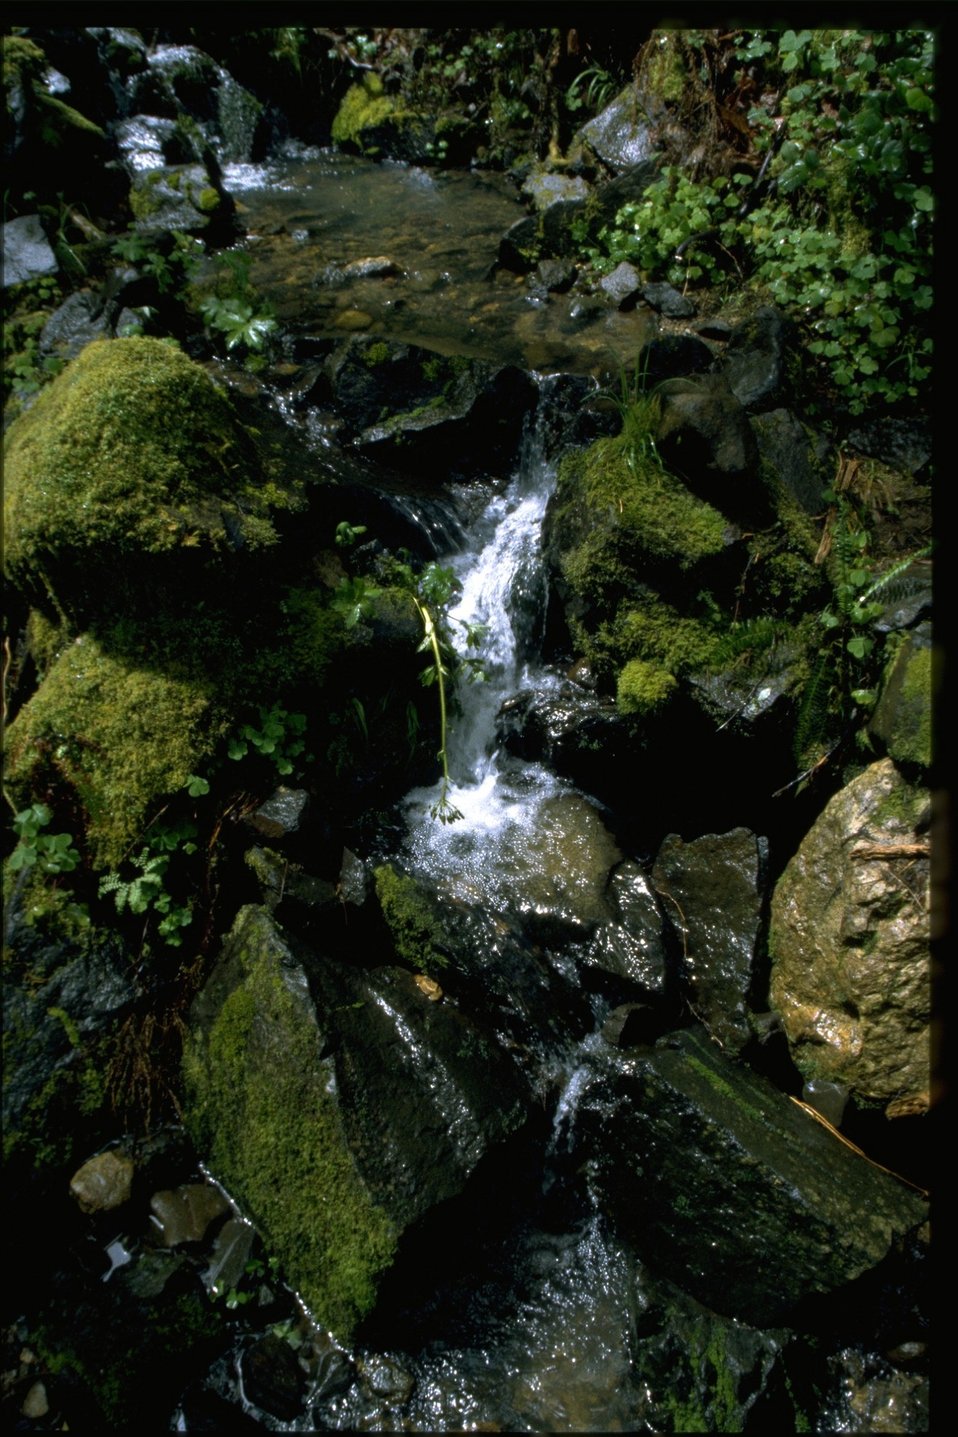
Swiftwater stream.